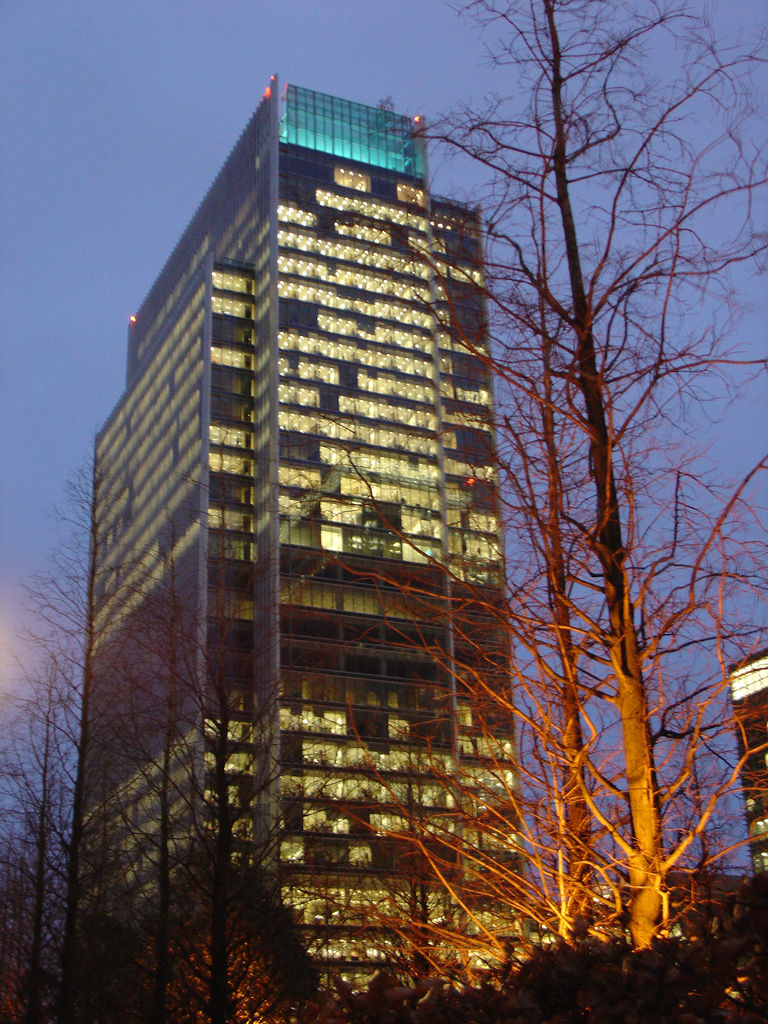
10 Upper Bank Street in London 10 Upper Bank Street